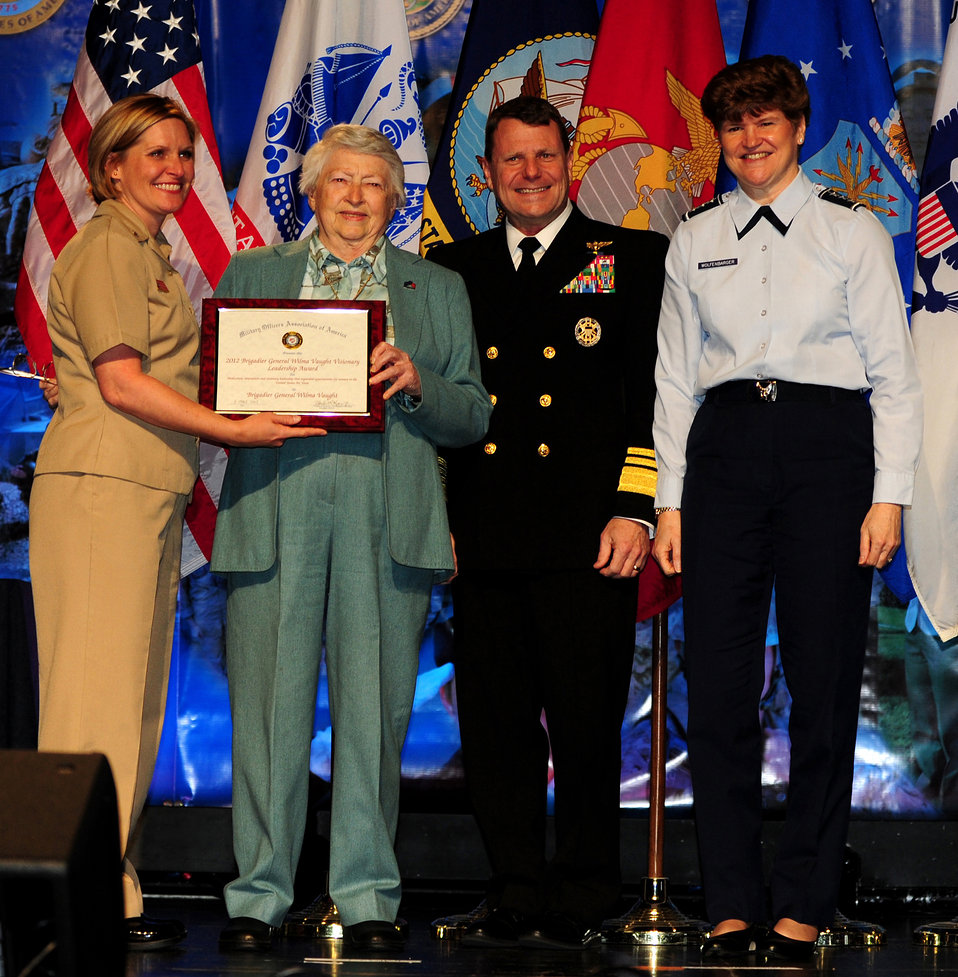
Women's Leadership

Retired Brig. Gen. Wilma Vaught receives the inaugural Brigadier General Wilma Vaught Visionary Leadership Award during the 2012 Joint Women's Leadership Symposium, March 5. The Air Force Award will be given to the officer, enlisted, and civilian for demonstrated visionary leadership that expanded opportunities for women and used innovation to inspire others to see the Air Force as a positive place for women to share their talents. Presenting Vaught the award are, Cmdr. Nicole Shue; Vice Adm. William Gortney; and Lt. Gen. Janet Wolfenbarger.